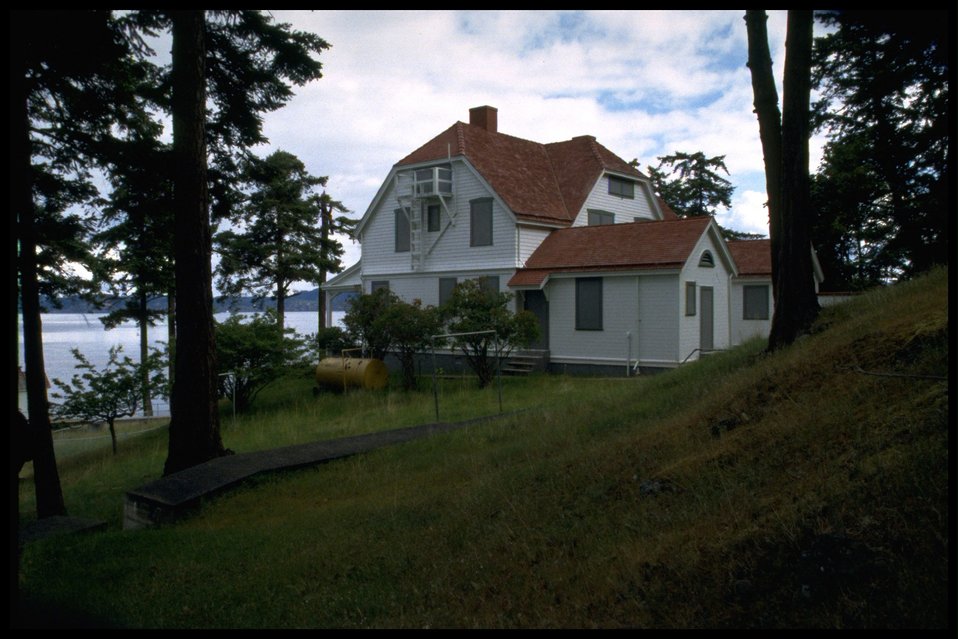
Living quarters at Turn Point. One in a series of ten shots of the living quarters.